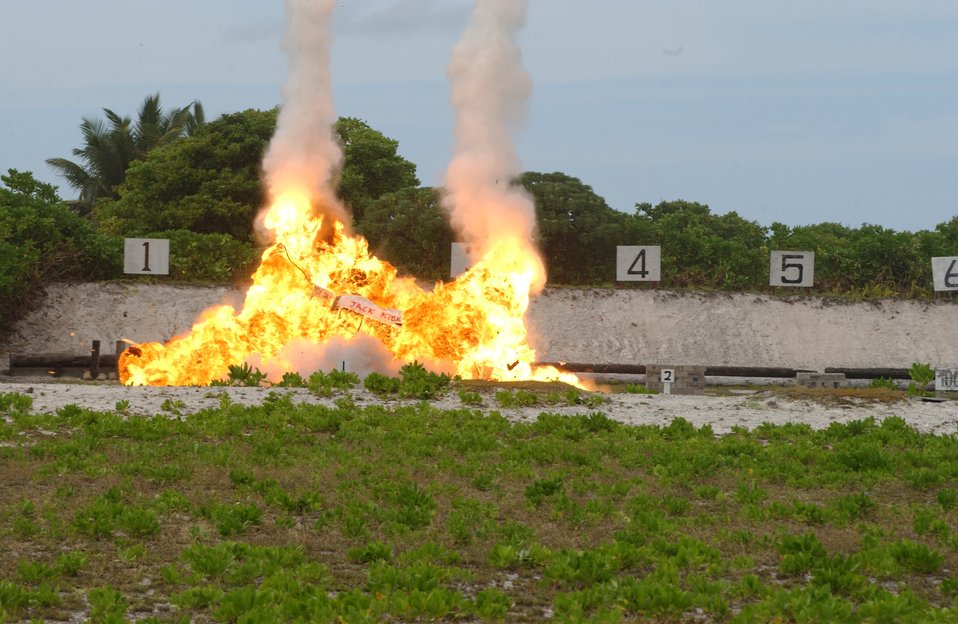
Ready, aim, fire

OPERATION ENDURING FREEDOM -- A van loaded with C-4 explodes during a firepower demonstration June 24 at a forward-deployed location. The demonstration involved the British Royal Marines, and U.S. Air Force security forces and explosive ordnance disposal Airmen deployed with the 40th Air Expeditionary Group.